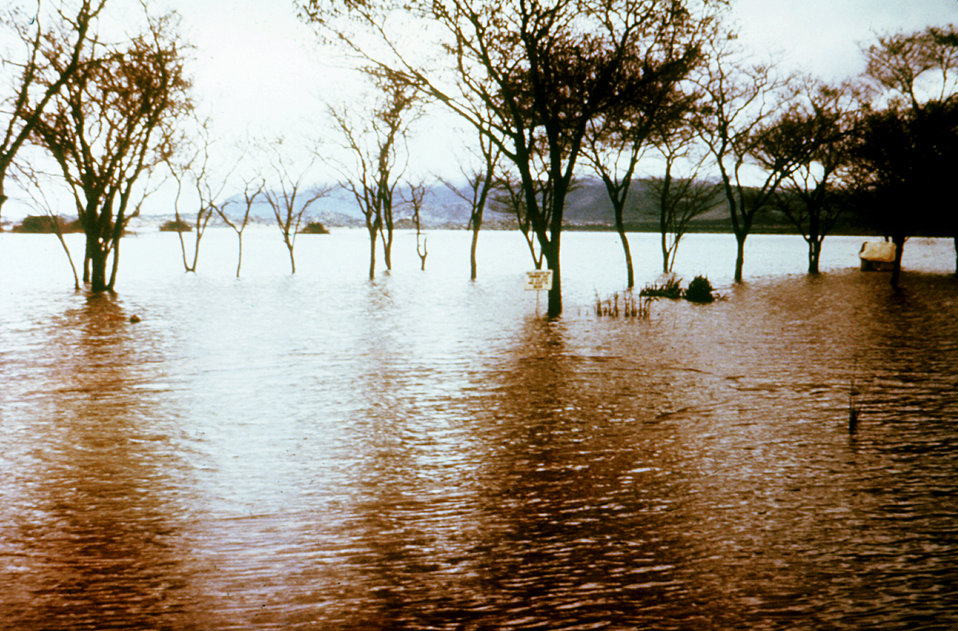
This body of water in Rhodesia, now Zimbabwe, was visited during the 1975 South African Marburg investigation.